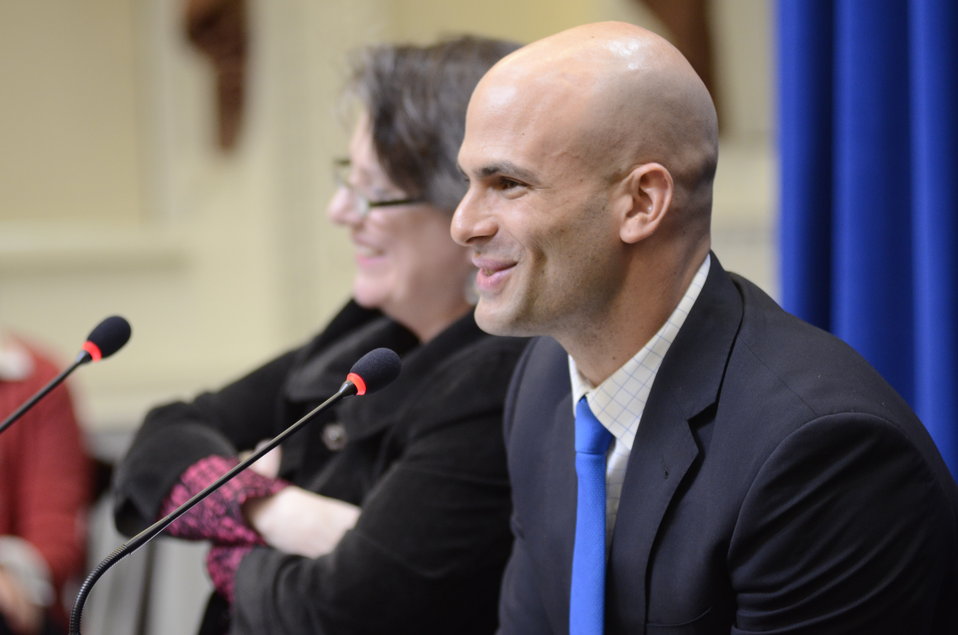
Agriculture Deputy Secretary Kathleen Merrigan (left) and White House Personal Chef and Food Policy Advisor Sam Kass (right) smile while Orren Fox, (aka @happychickens) a teenage chicken/bee keeper, from Boston, talked about learning where his food comes from that he started raising chickens in his backyard when he was nine. Now he has 32 chickens, 4 ducks and over 200,000 bees. He is the face of Agriculture’s future. He is joined by his father, Henry, during a Know Your Farmer Compass event that used twitter social media to continue the National Conversation on Local and Regional Food projects and how they offer economic opportunities to local farmers, ranchers and food entrepreneurs. The virtual conversation via twitter was from the White House, in Washington, D.C., on Monday, March 5, 2012.